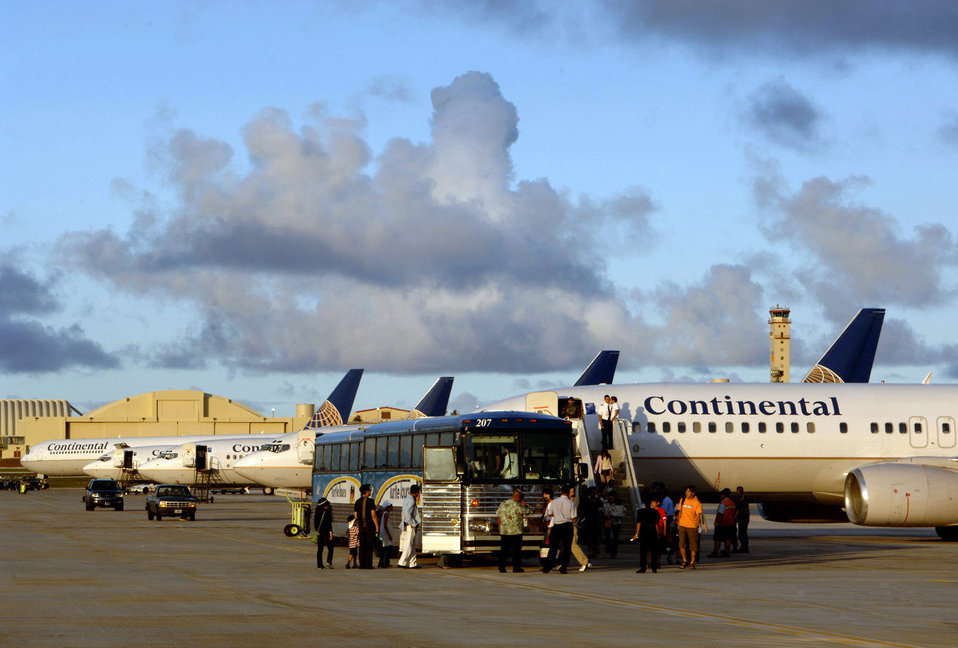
Anderson answers call for help

ANDERSEN AIR FORCE BASE, Guam -- More than 800 passengers arrived safely and cleared through customs after their commercial flights were diverted here because of an emergency that temporarily closed Won Pat International Airport, Guam on Aug. 19. Airmen and local custom agents and authorities worked together to process passengers on eight airliners.